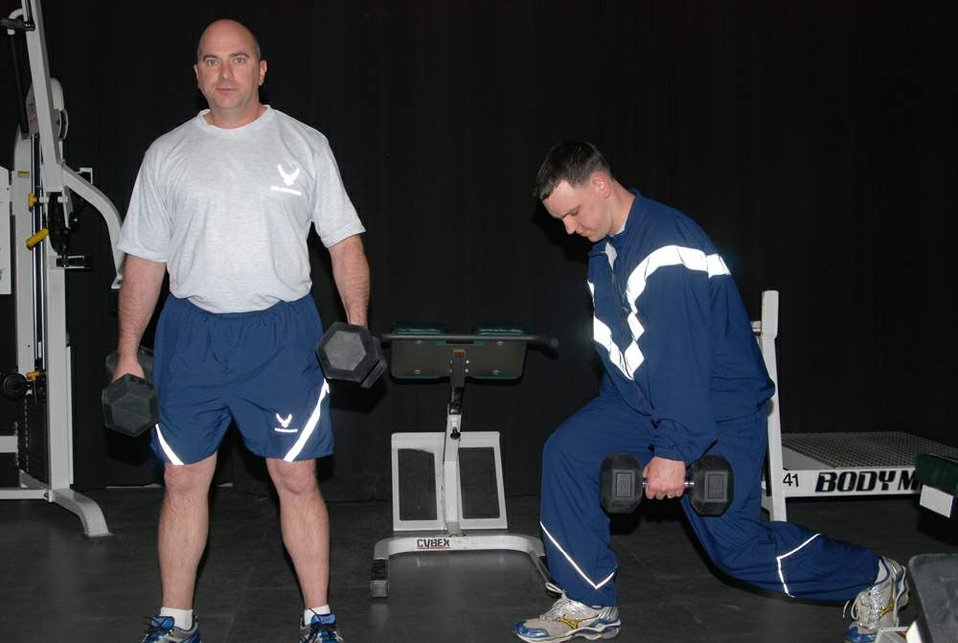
Prototype PT uniforms undergo wear tests

Master Sgt. James Lynn (left) and Capt. Nick Ferry workout in the uniforms that are currently being tested at Wright-Patterson Air Force Base, Ohio, and elsewhere. A prototype physical training uniform for the Air Force is undergoing wear testing here, the Pentagon and MacDill AFB, Fla. Sergeant Lynn is a subject matter expert and Captain Ferry is the manager for the PT uniform. Both Airmen are with the Air Force Uniform Ofifce.